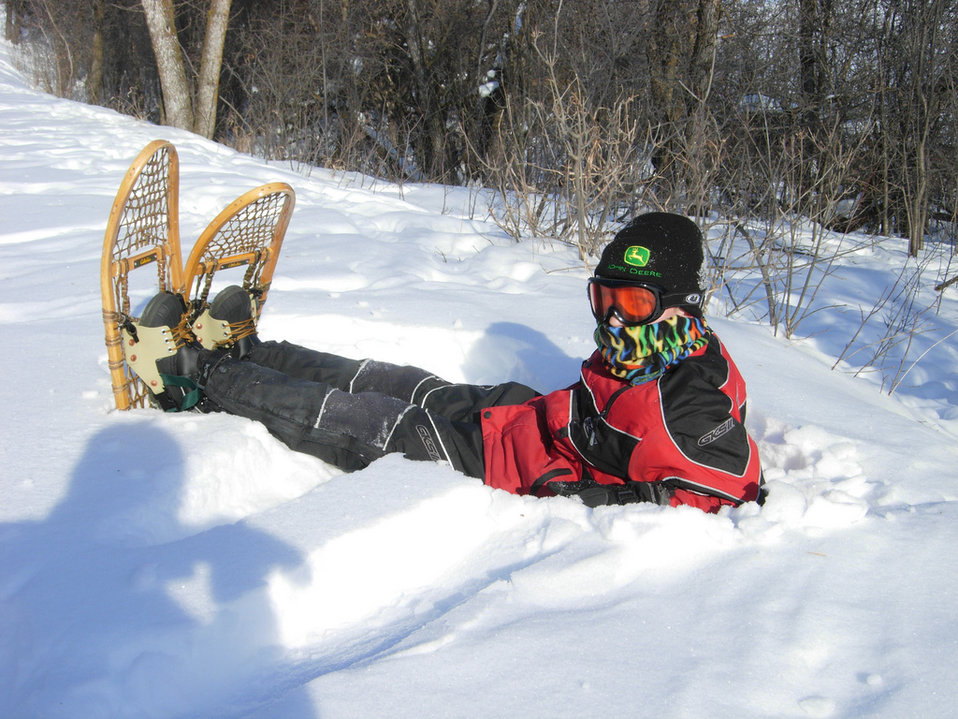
Snowshoe Break at Des Lacs Refuge

Dalton Petersen takes a break from snowshoeing at Des Lacs National Wildlife Refuge in North Dakota. Snowshoeing is one of many seasonal activities available at the refuge.